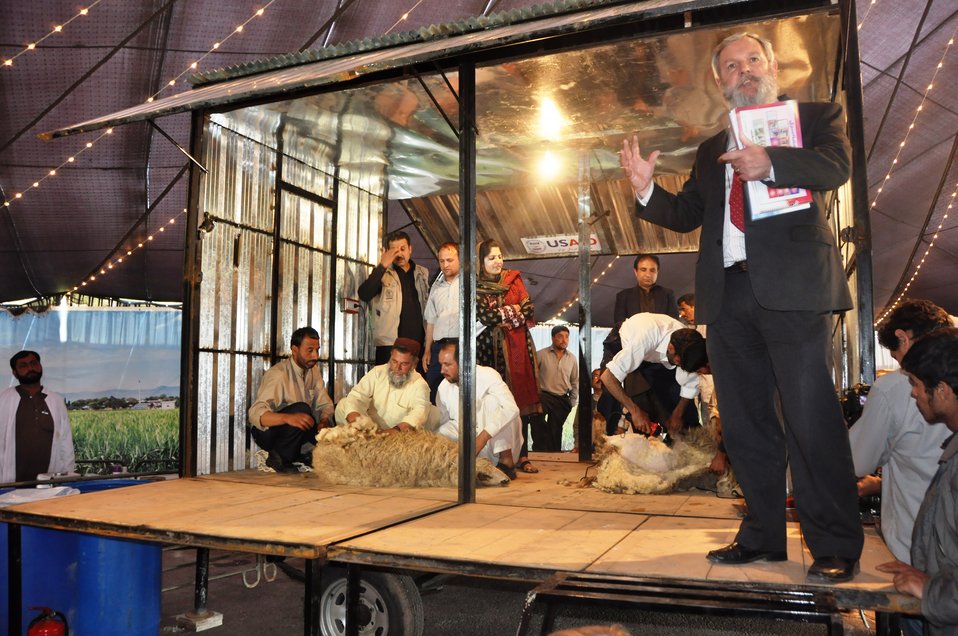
A demonstration in a USAID-sponsored mobile shearing shed showcases the difference between the old ways of shearing sheep and the new technology